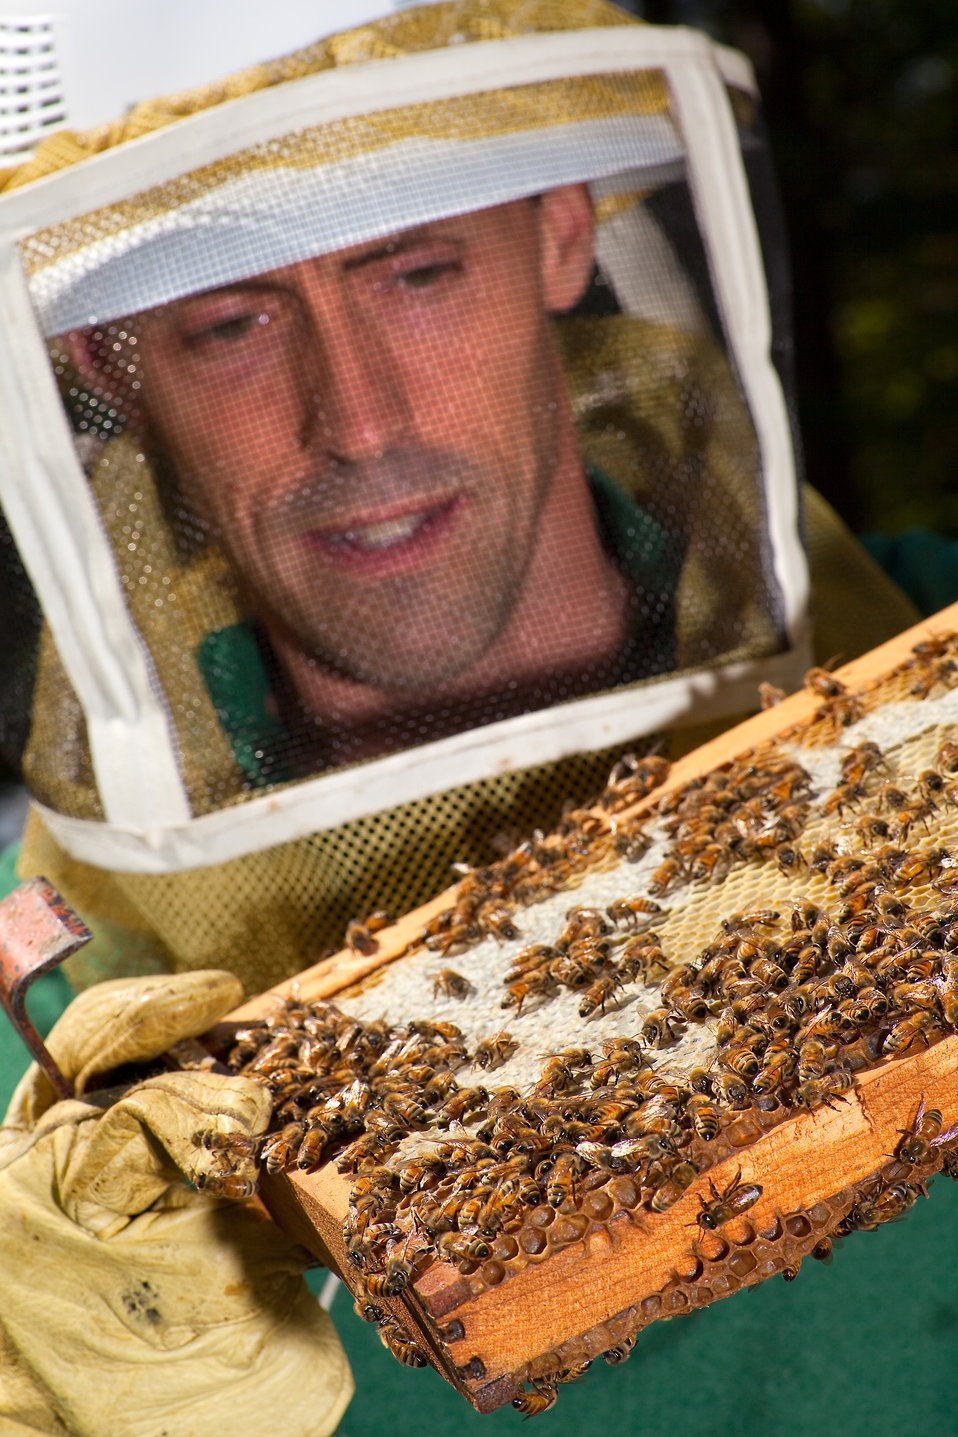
U.S. Department of Agriculture (USDA) Agricultural Research Service (ARS) entomologist Jay Evans inspects a comb of honey bees for signs of mites and brood disease in Beltsville, MD on Oct. 2, 2011.